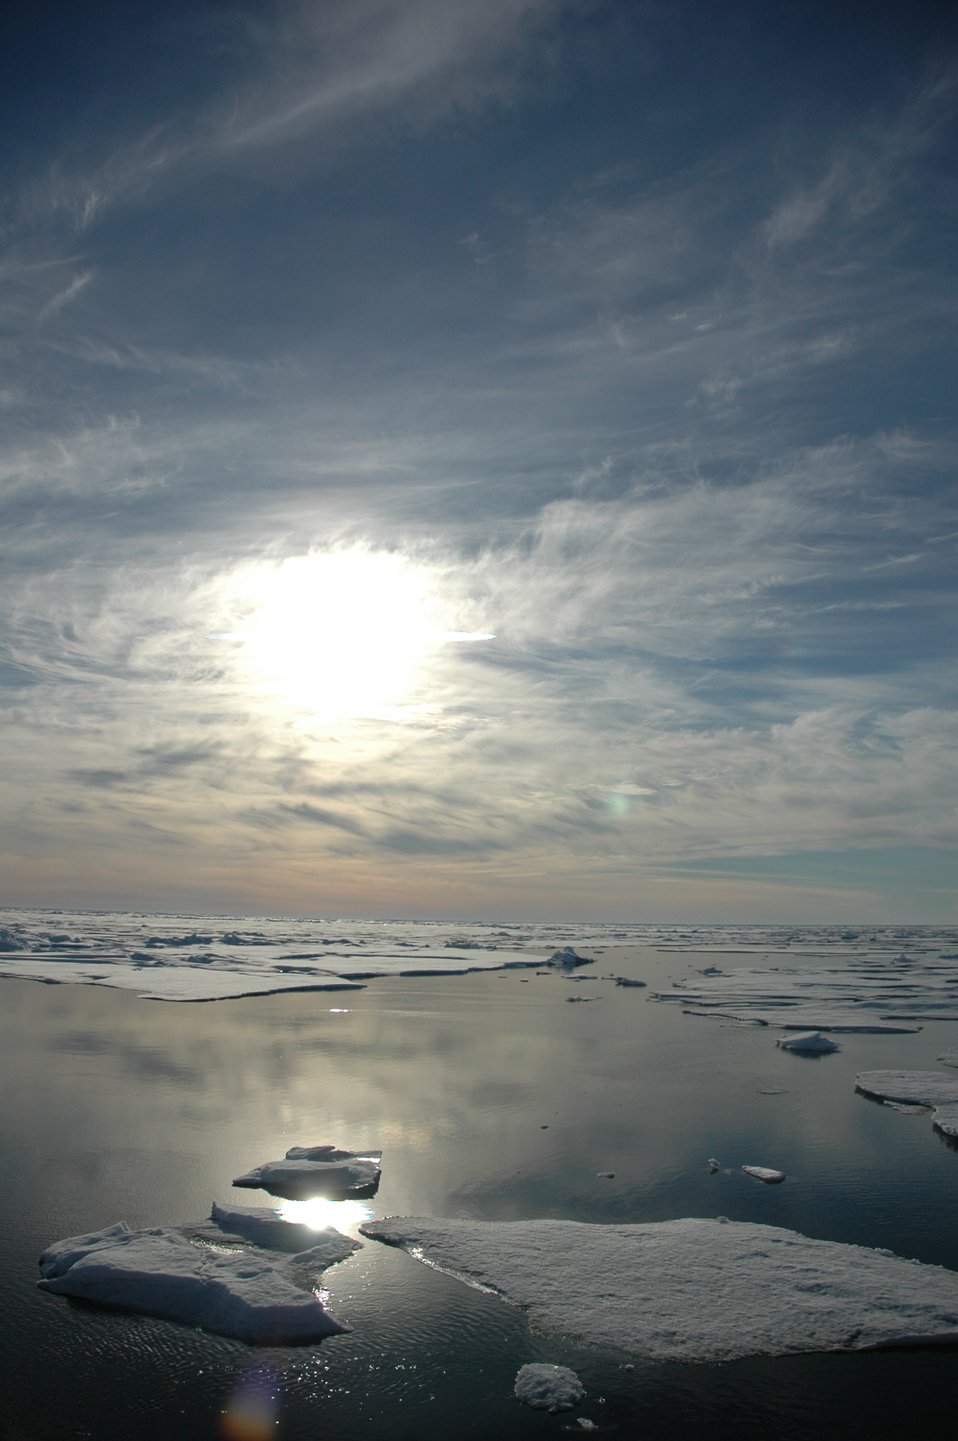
Midnight sun, melting Arctic ice, open leads, and cirrus clouds.